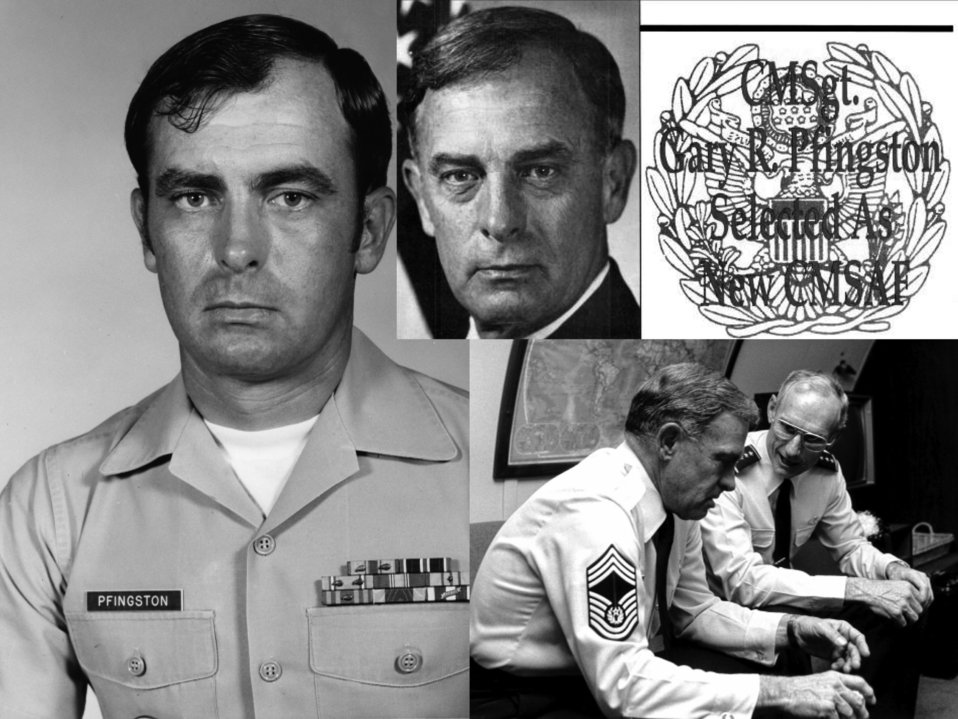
Chief Pfingston loses fight with cancer

Retired Chief Master Sgt. Gary Pfingston, the 10th chief master sergeant of the Air Force, died of cancer June 23 in San Antonio.